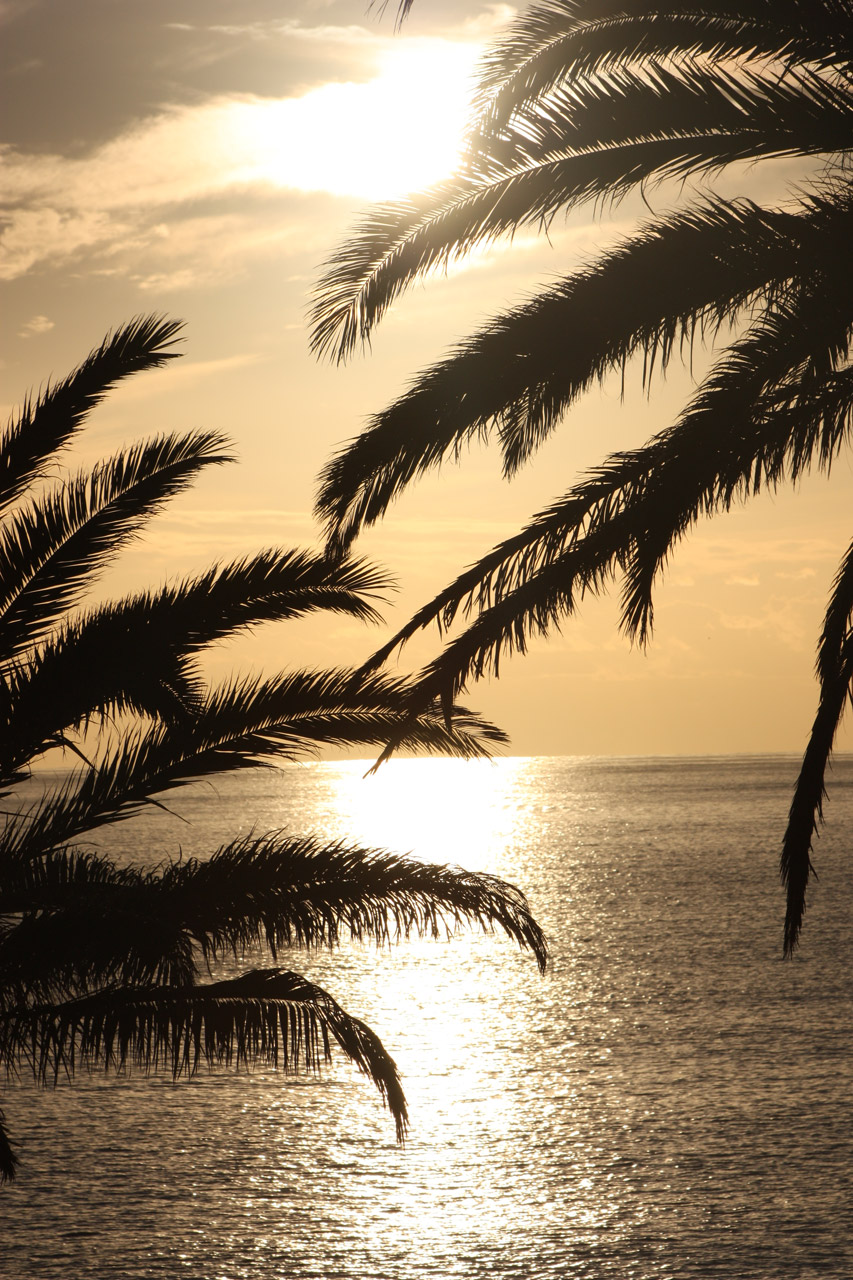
Sunset at sea.